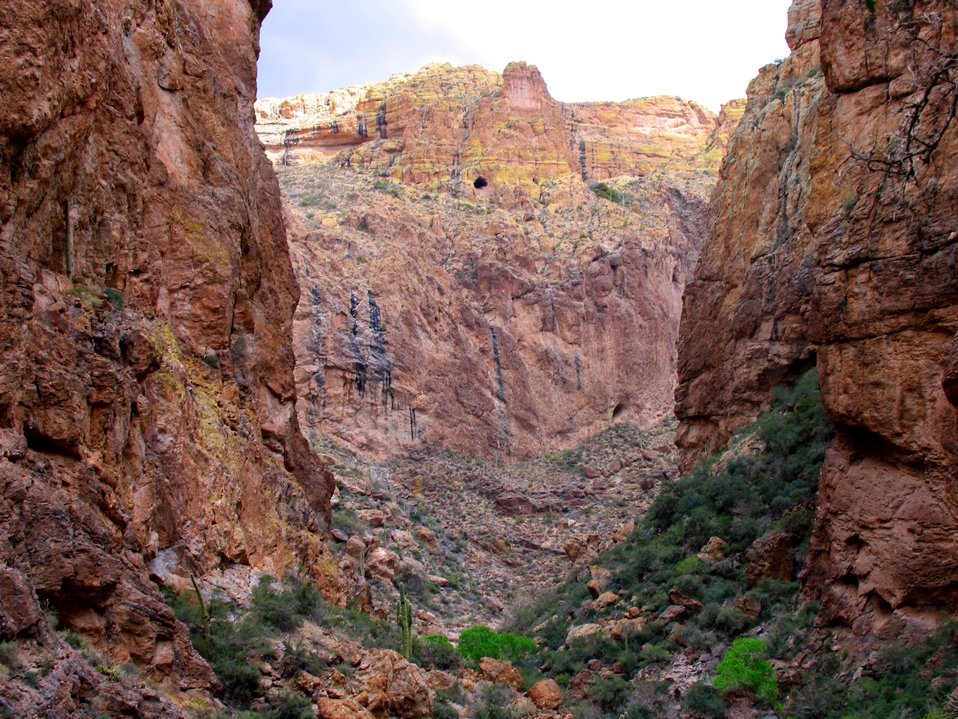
Sandstone cliffs, perhaps a lost mine on the cliff high above, and desert foliage in the canyon bottoms.